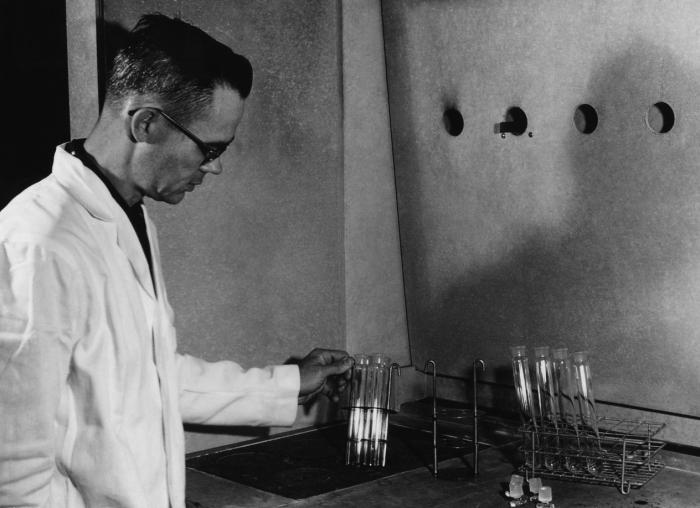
This historic photograph depicted a laboratory scene in which a laboratorian was handling test tubes that had been used in rabies diagnostic tests.